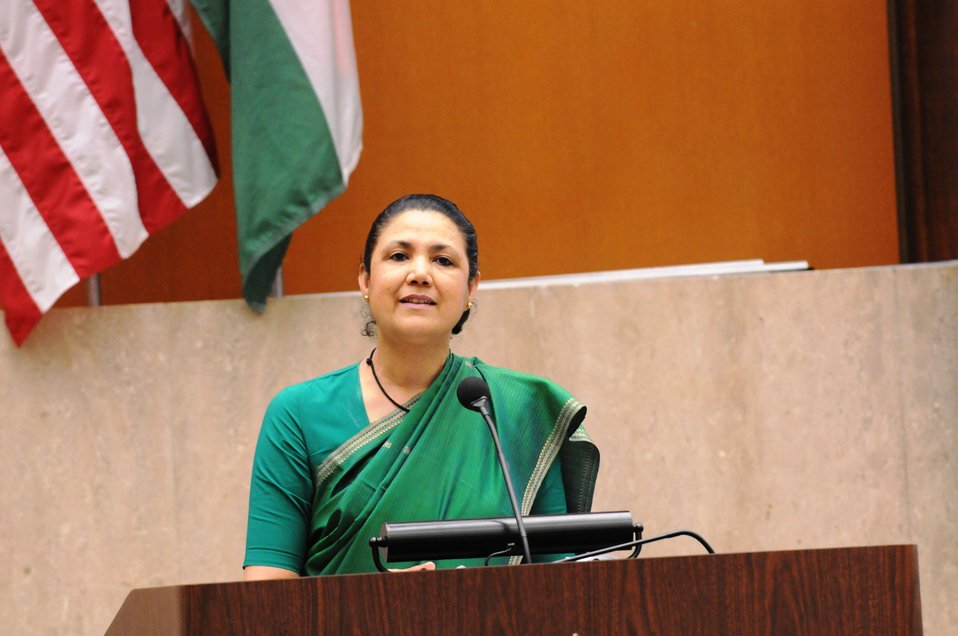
Indian Ambassador to the U.S. Shankar Delivers the Closing Remarks

Indian Ambassador to the U.S. Meera Shankar delivers the closing remarks at the U.S.-India People to People Conference held at the U.S. Department of State in Washington, D.C., on October 28, 2010.